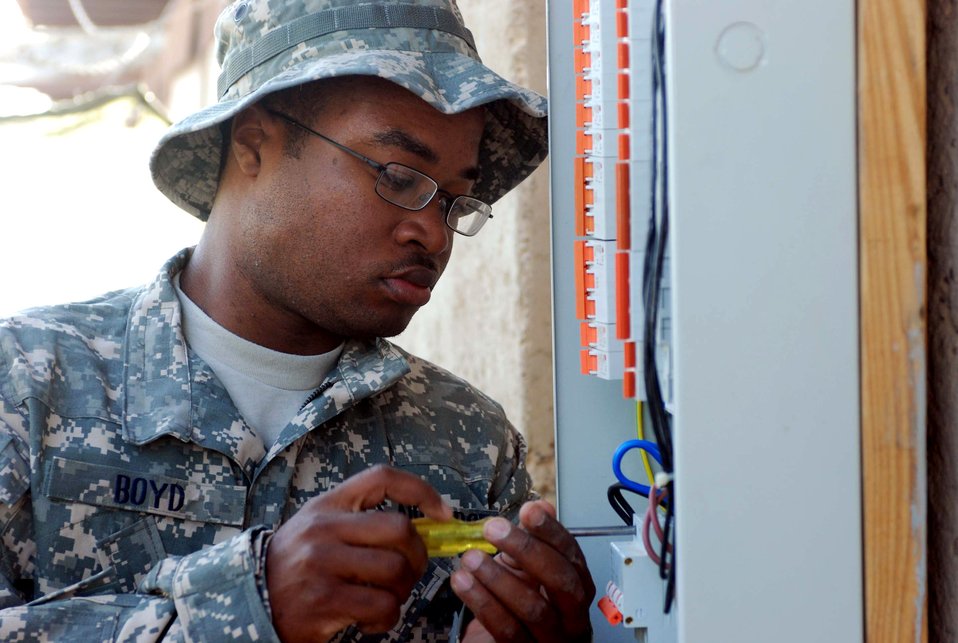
Airmen revamp Iraqi police training facility

Staff Sgt. Taraus Boyd works on the wiring of the new classroom at the Iraqi police training site at Balad Air Base, Iraq. Along with building the classroom, Airmen built a mock checkpoint, covered live-fire range and living quarters for the students. Sergeant Boyd, 732nd Expeditionary Logistics Readiness Squadron, Det. 6 electrician, is deployed from Beale Air Force Base, Calif.